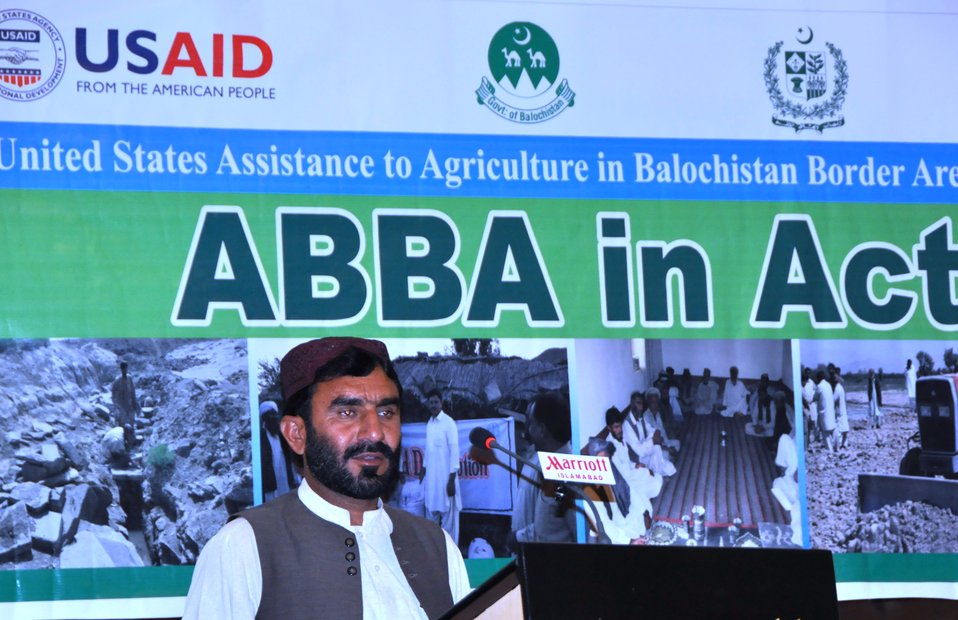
U.S. Helps Rural Communities Increase Incomes and Jobs

Islamabad, April 1, 2011 – Ghulam Haider, a farmer from Balochistan, discusses the assistance received from a USAID-funded project that will help some 240,000 farmers in five border districts of Balochistan.